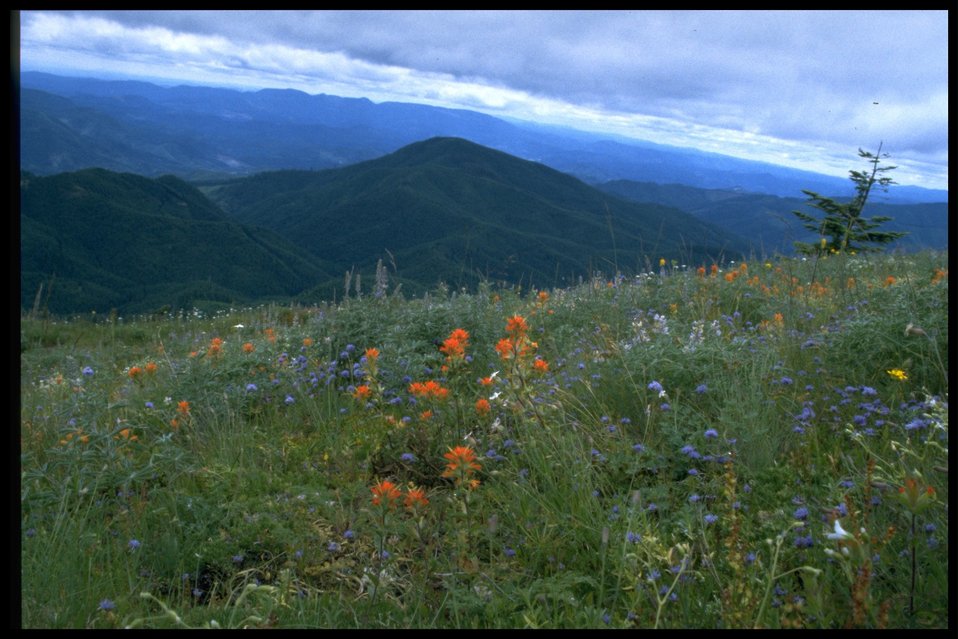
Meadow, wildflowers, scenic view from Mary's Peak.